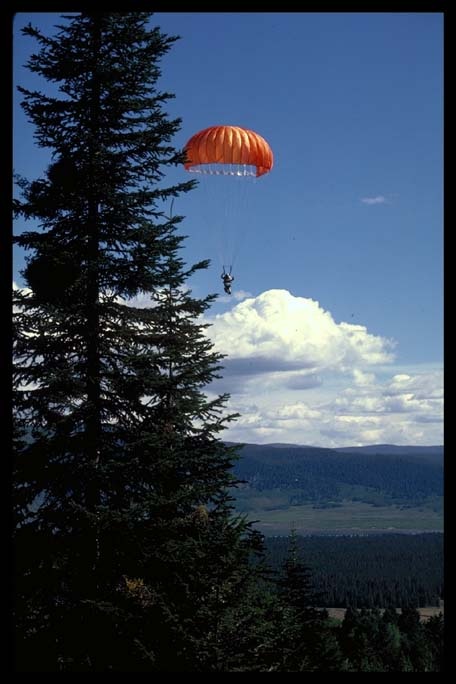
Smokejumper